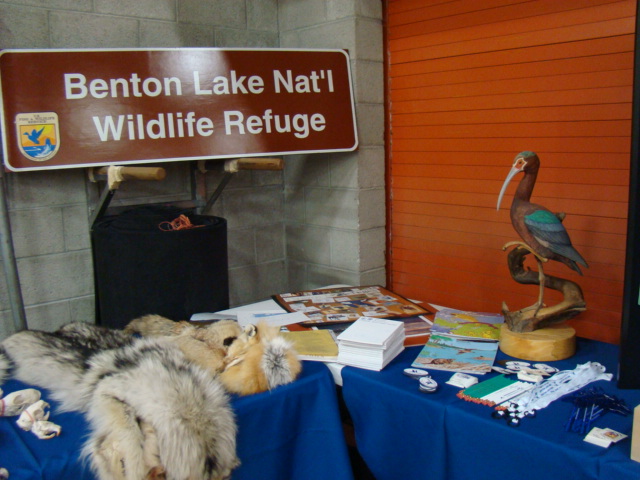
Great Falls STEM Expo

Every spring Benton Lake NWR participates in the Great Falls STEM (Science, Technology, Engineering, Math) Expo. We set up a booth complete with pictures, furs, skulls, animals, and even a duck banding station!